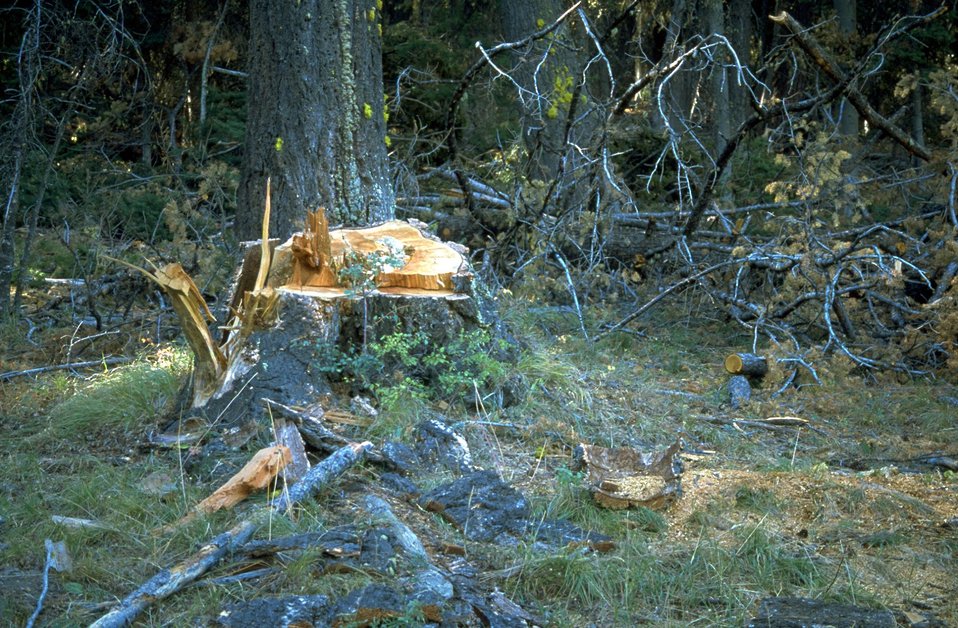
Tree stump and slash in forest setting